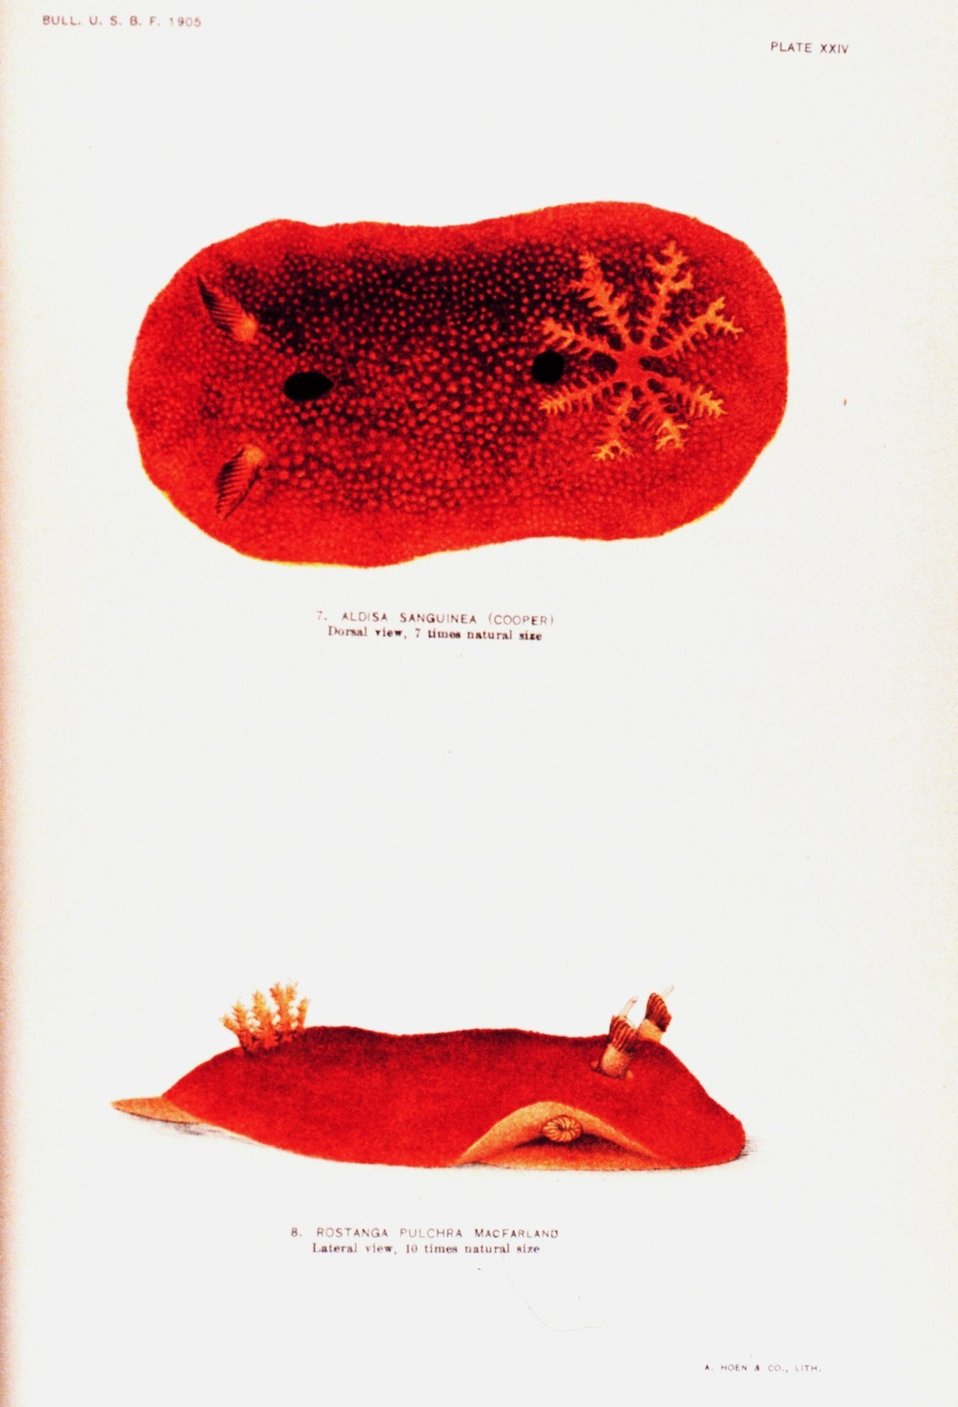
Nudibranchs. 7. Aldisa sanguinea (Cooper) - Dorsal view. 8. Rostanga pulchra MacFarland - lateral view. Both painted by Anna B. Nash of the Hopkins Seaside Laboratory. In: 'Opisthobranchiate Mollusca from Monterey Bay ....', Bulletin of the Bureau of Fisheries, Volume 25, 1905. P. 151, Plate XXIV.